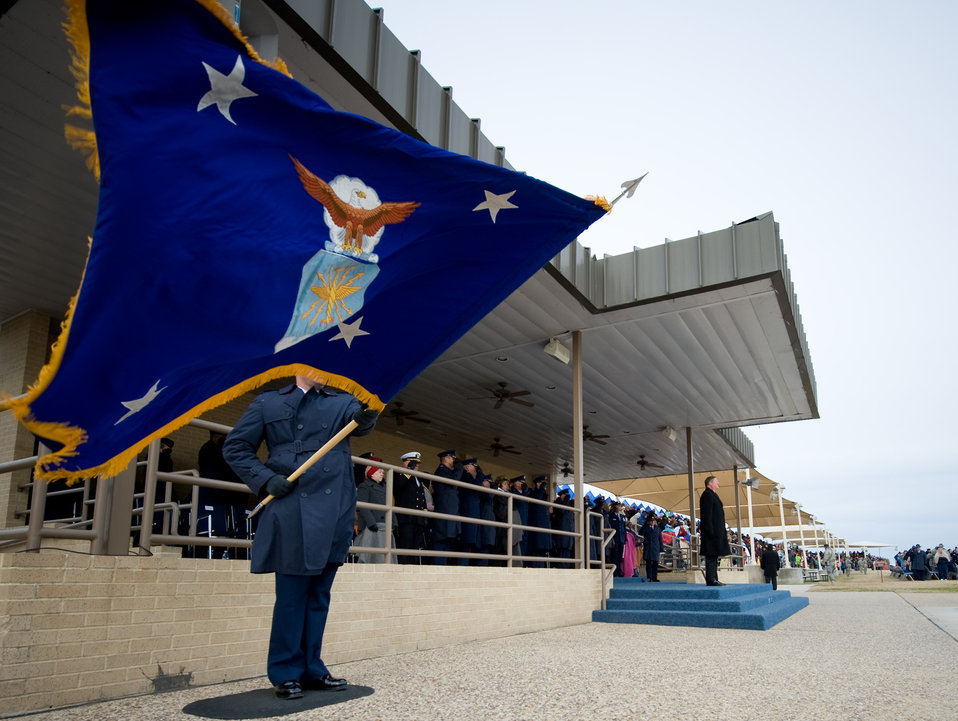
Air Force secretary visits Lackland, addresses priorities

Secretary of the Air Force Michael Donley (top of steps), stands ready for approaching flights to pass in review during a Basic Military Training graduation ceremony Jan. 8, 2010, at Lackland Air Force Base, Texas.